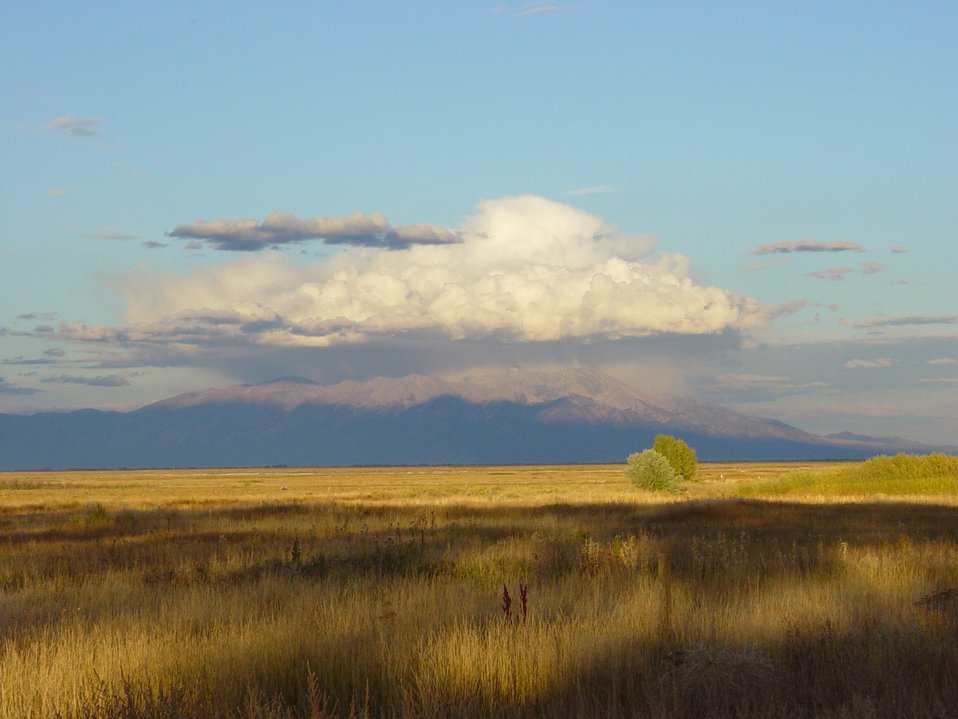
Sunset over the Sangre de Cristo Mountains

The sun sets on the Sangre de Cristo Mountains at Monte Vista National Wildlife Refuge in the San Luis Valley in southern Colorado.